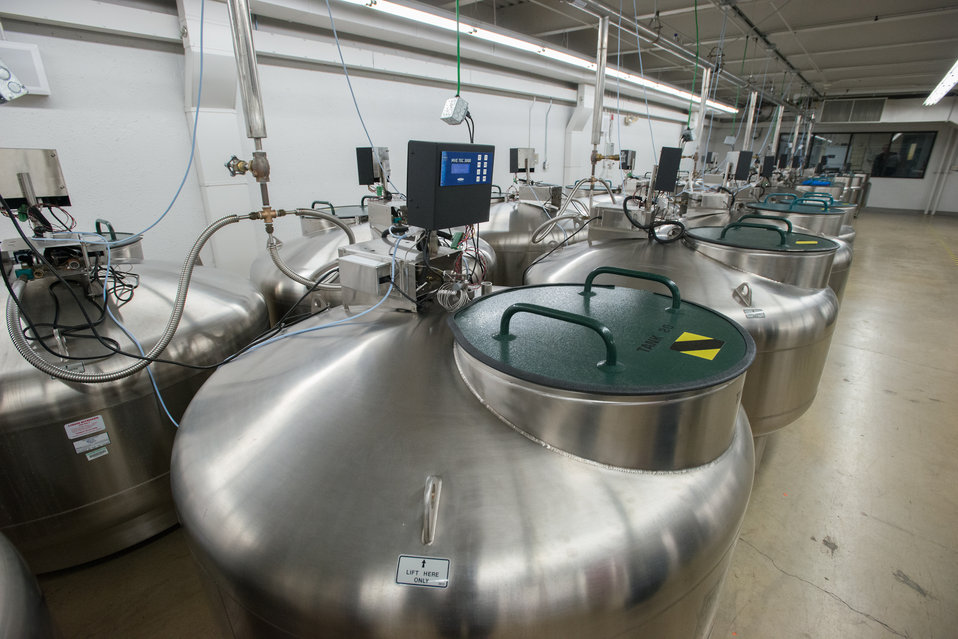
This is the U.S. Department of Agriculture's (USDA) Agriculture Research Service (ARS) National Center for Genetic Resources Preservation (NCGRP) Cryogenic Storage Vault in Ft. Collins, CO on Wednesday, Nov. 6, 2013. The vault currently operates more than 45 cryogenic tanks that hold animal germplasm, plant tissue culture, and seeds that are stored at -196 °C (-321 °F) in liquid nitrogen storage or to -193 C. (-315 °F) in nitrogen vapor storage. NCGRP is the largest agricultural gene bank facility in the U.S. The NCGRP staff conducts groundbreaking research to develop more efficient and effective means for preserving plant and animal germplasm, and for better understanding the genetic structure of these invaluable materials. The research findings, preservation techniques, and specialized technology developed by the NCGRP have been adopted by gene banks around the world: many international scientists travel to the NCGRP for research and training.